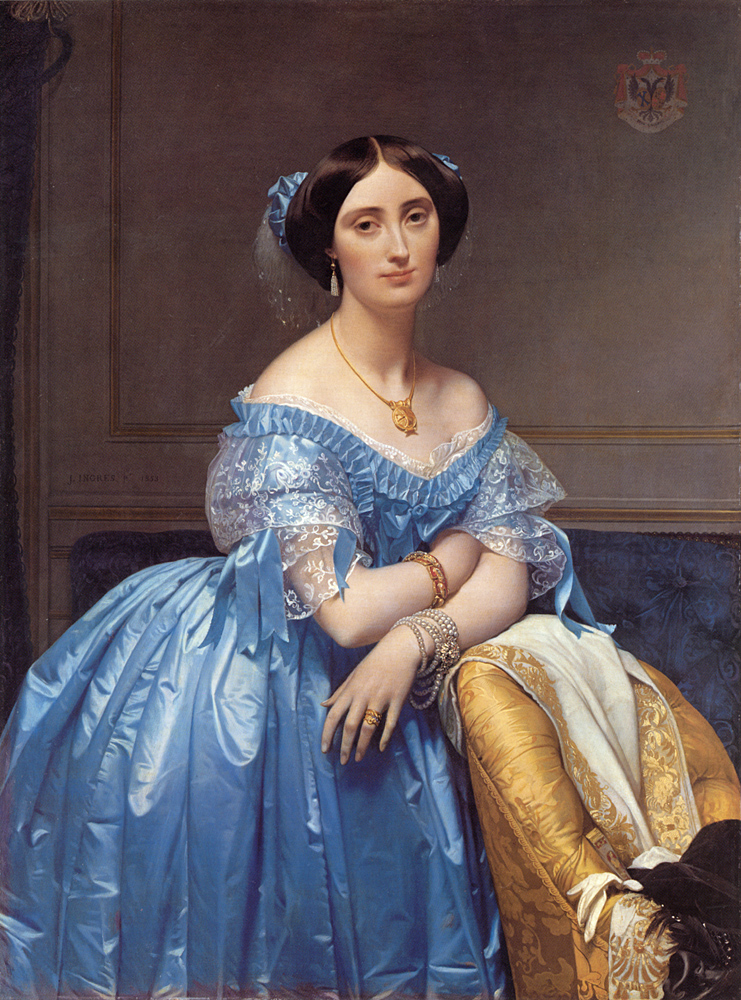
Ingres Princess Albert de Broglie